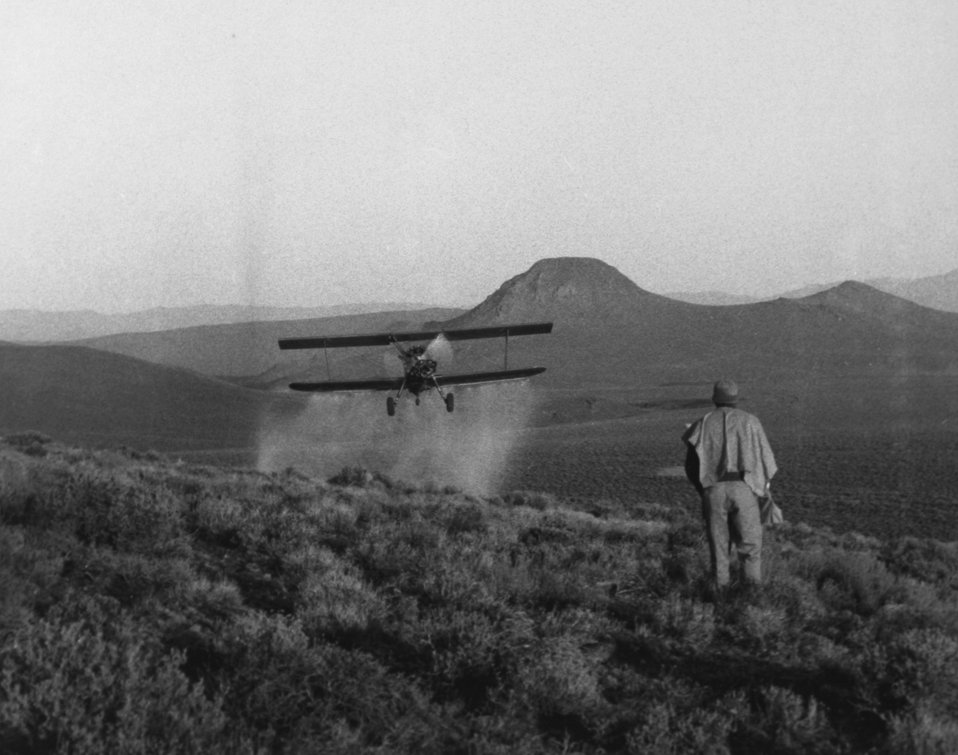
Antelope Springs bursh spray SE of Fields, Oregon May 1966